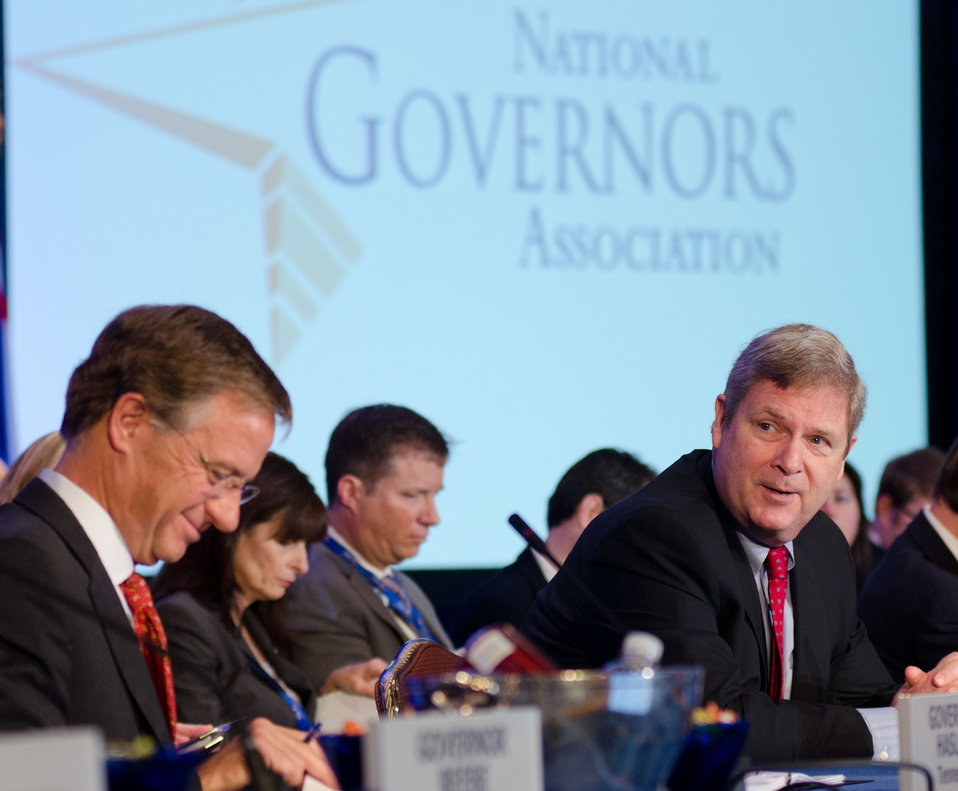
Agriculture Secretary Tom Vilsack (right) was a guest speaker at the National Governors Association Education, Early Childhood and Workforce Committee meeting in Washington, D.C., on Sunday, February 26, 2012.